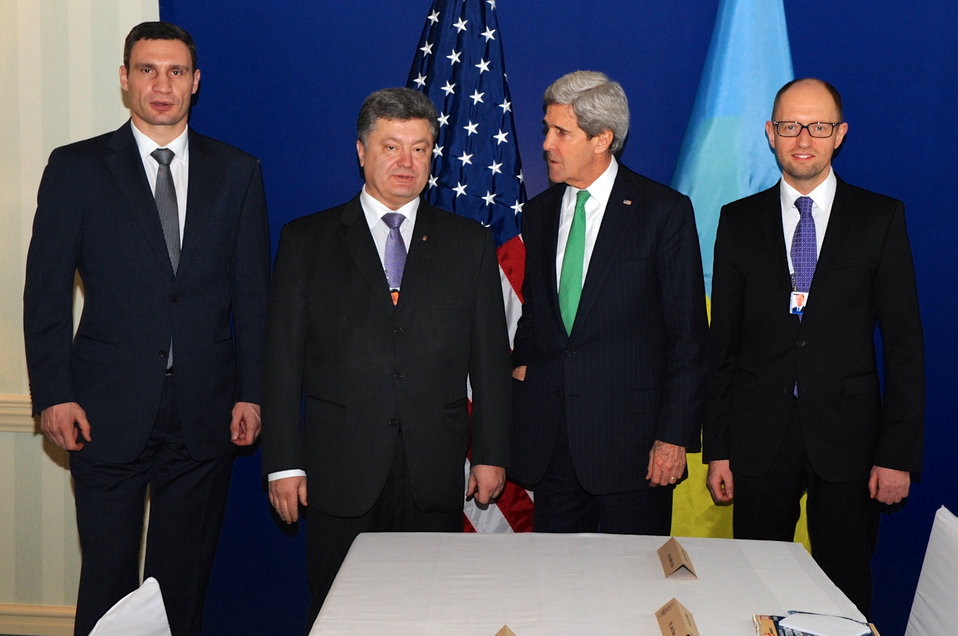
Secretary Kerry Poses for a Photo With Ukranian Opposition Leaders in Munich

U.S. Secretary of State John Kerry poses with Vitali Klychko of the UDAR Party, Petro Poroshenko of the Euromaidan Movement, and Arseniy Yatsenyuk of the Fatherland Party before a meeting with the Ukrainian opposition leaders on the sidelines of the Munich Security Conference in Munich, Germany, on February 1, 2014.